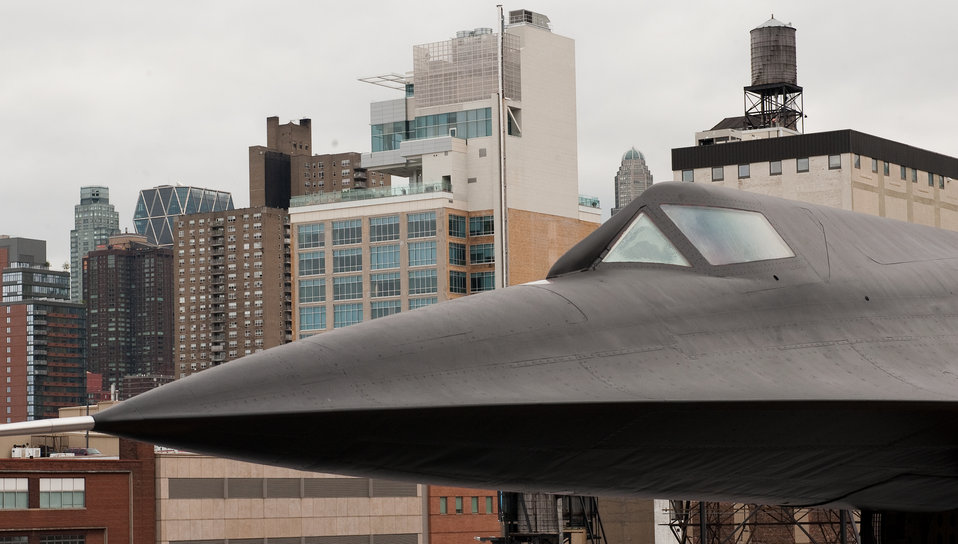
Air Force Week New York City Proclamation Ceremony

New York City skyline and forward fusalage of an A-12 on display on the carrier deck during the Air Force Week New York City proclamation ceremony at the USS Intrepid on Aug. 24, 2010. The event at the Intrepid Sea, Air & Space Museum was highlighted by a six-ship flyover by the USAF Thunderbirds. The Honorable Michael Donley, Secretary of the Air Force attended, along with General Raymond Johns, Commander of Air Mobility Command. The Police Commissioner of the City of New York, the Honorable Raymond Kelly, represented NYC. Mr. Greg Kelly of